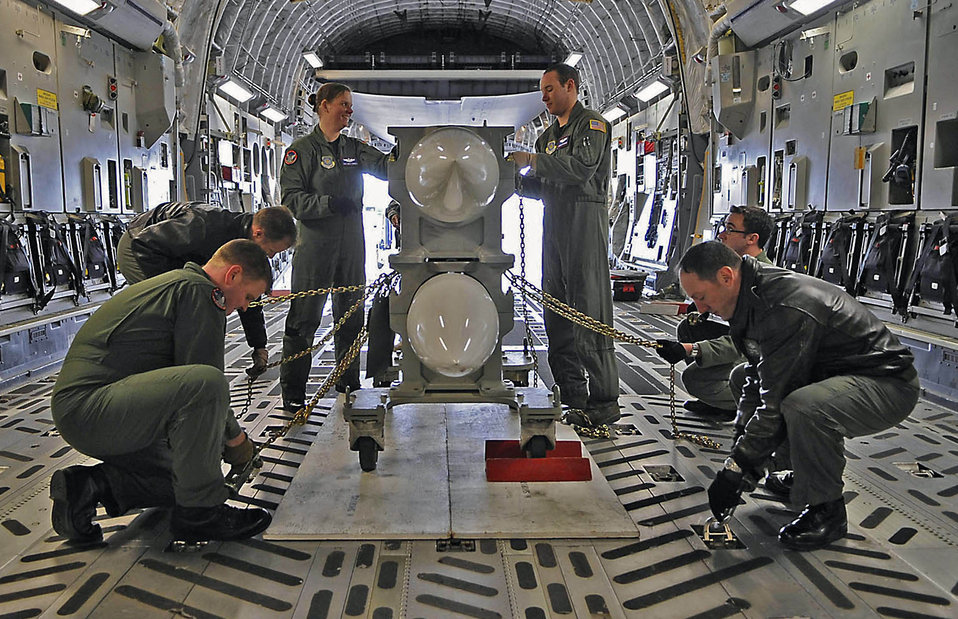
Handle with care

Airmen of the 62nd Airlift Wing strap down a nuclear test missile to a C-17 Globemaster III. The 62nd Airlift Wing received top honors as the nation's prime nuclear airlift force after a week-long inspection.